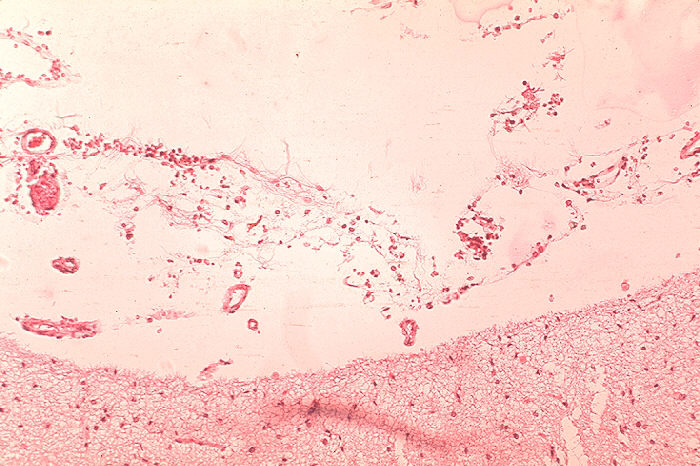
Histopathology of meninges in fatal human anthrax.